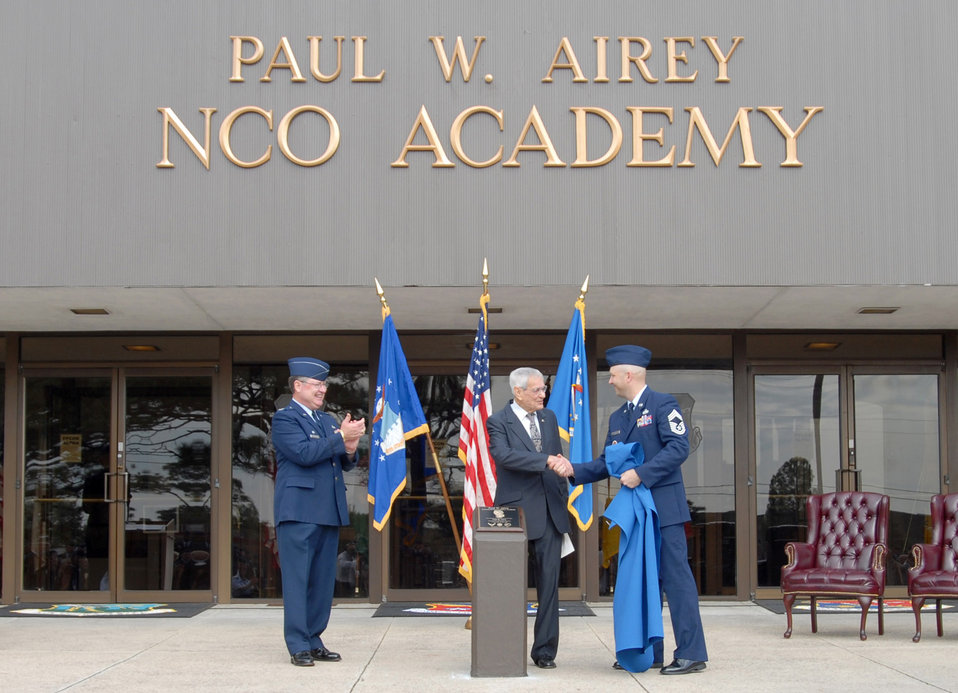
Tyndall NCO Academy renamed after first CMSAF

Chief Master Sgt. Thomas Schwenk congratulates former Chief Master Sgt. of the Air Force Paul Airey (center) after a dedication plaque was unveiled, while Col. Albert John Bowley Jr. looks on Dec. 13 at Tyndall Air Force Base, Fla. The Tyndall AFB NCO Academy was renamed the Paul W. Airey NCO Academy in honor the first chief master sergeant of the Air Force. Chief Schwenk is the commandant of the academy and Colonel Bowley is commander for the College for Enlisted Professional Military Education.